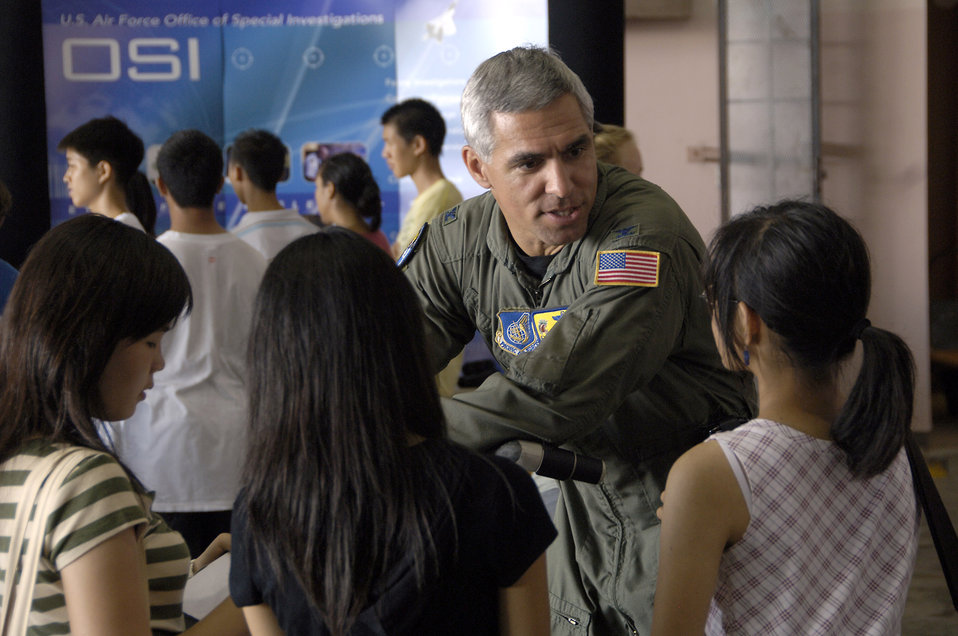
Hickam hosts Education Day

Col John J. Torres speaks to students during Air Force Education Day at Hickam Air Force Base, Hawaii, Sept. 13. The Air Force hosted the day for Hawaii public school math and science students as part of Air Force Week Honolulu. Colonel Torres is the 15th Airlift Wing commander.